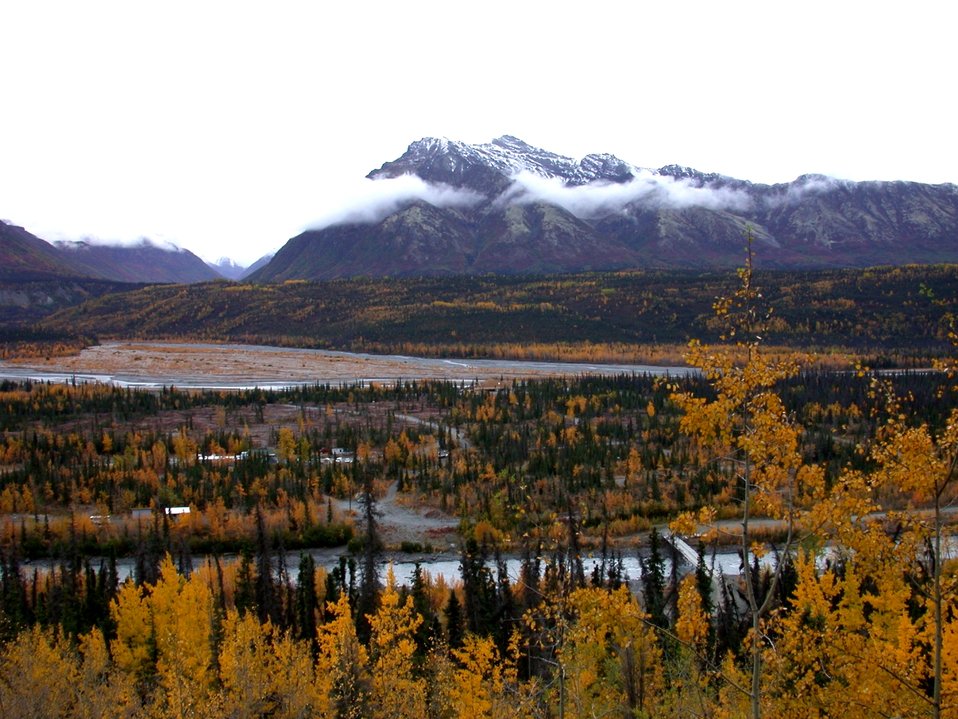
Looking over the braided channels of the Susitna River.